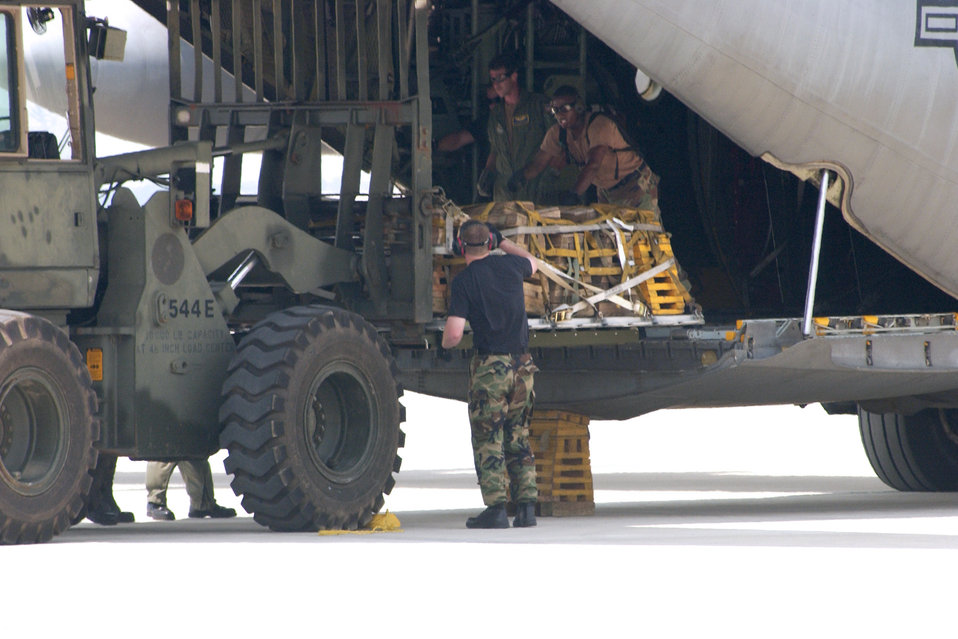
Off to the rodeo

POPE AIR FORCE BASE, N.C. -- Airmen of the base's rodeo team load pallets onto a C-130 Hercules here June 15 in preparation for their departure. The team leaves June 18 for McChord Air Force Base, Wash., where the international mobility competition will take place. Teams from active-duty Air Force, Air Force Reserve Command, Air National Guard units and teams from allied nations will participate in the weeklong event.